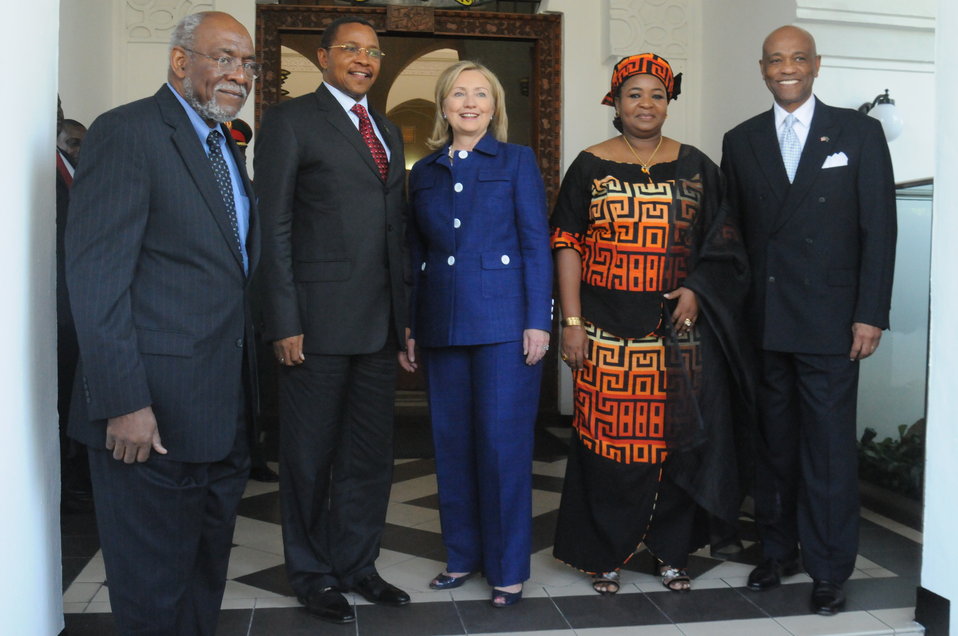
Assistant Secretary Carson, Tanzanian President Kikwete, Secretary Clinton, and Ambassador Lenhardt Pose for a Photo

U.S. Assistant Secretary of State for African Affairs Johnnie Carson, far left; Tanzanian President Jakaya Kikwete, second from left; U.S. Secretary of State Hillary Rodham Clinton, center; and U.S. Ambassador to Tanzania Alfonso Lenhardt, right; pose for a photo outside of the State House in Dar es Salaam, Tanzania, on June 13, 2011.